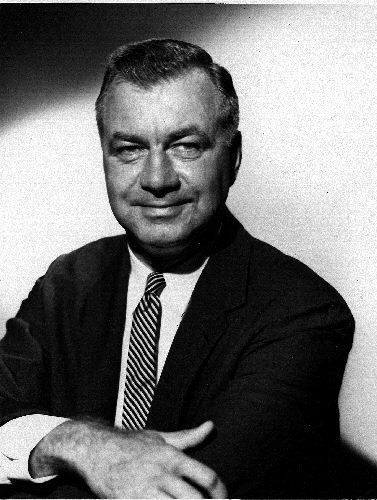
Robert J. Anderson, MD, MPH, Chief, CDC, 1956 - 1960.